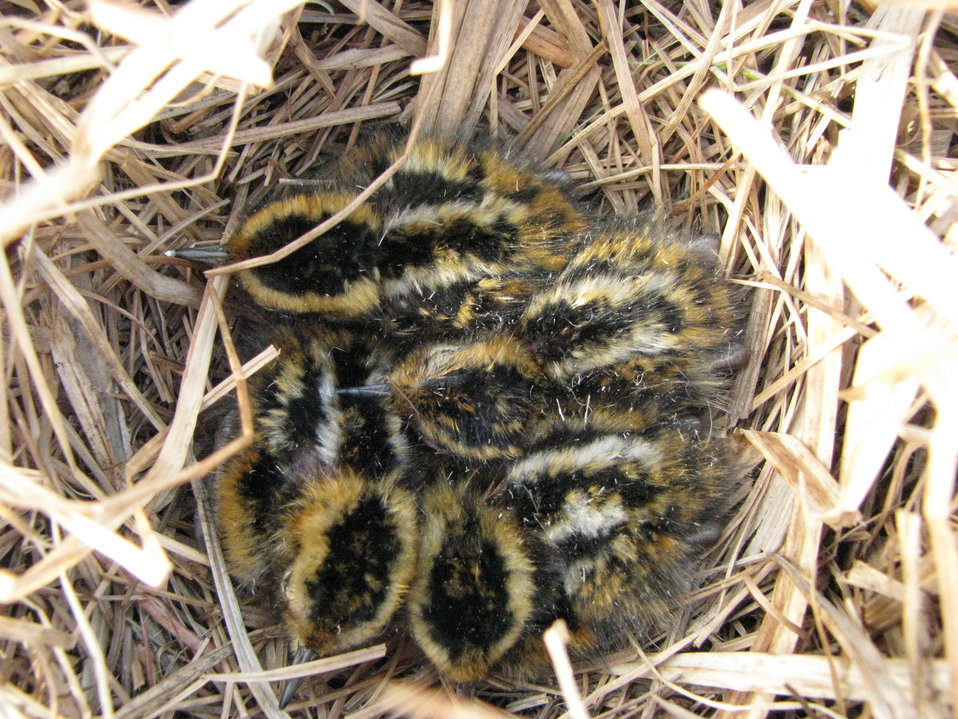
Phalarope chicks

Yukon Delta NWR
Just little guys!